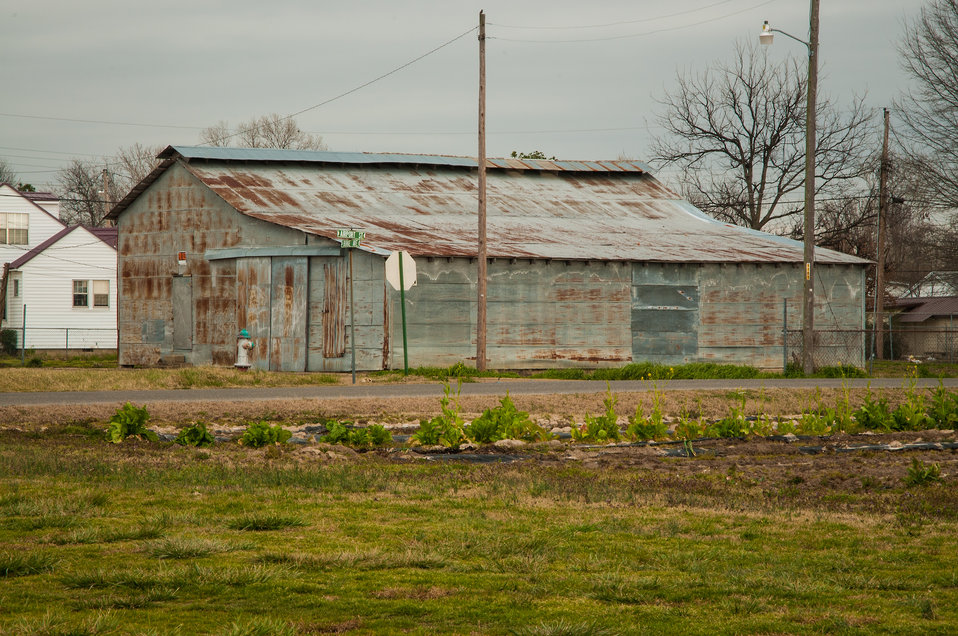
A vacant building sits by the roadside in Forest City, AR on Mar. 4, 2013. The U. S. Department of Agriculture (USDA) in partnership with Heifer International (an International organization whose mission is to work with communities to end hunger and poverty and care for the Earth) and various for-profit and non-profit organizations have organized the Seeds of Change Implementation Plan to use sustainable agriculture to build food systems in the Arkansas Delta. The program has evolved into the Arkansas Delta Seeds of Change (ADSOC) Initiative. The East Arkansas Enterprise Community, (EAEC) Inc. in Forrest City, AR is one of 42 community-based organizations located in high poverty areas in the U.S. to benefit from the ADSOC Initiative.